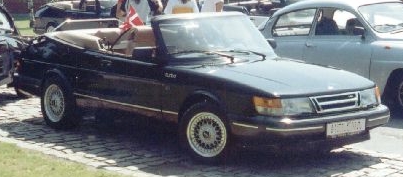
Classic SAAB 900 convertible, SOC 2004, Ebeltoft, Denmark. Replaced with pic made by MH 07:39, 2005 Jun 3 (UTC)